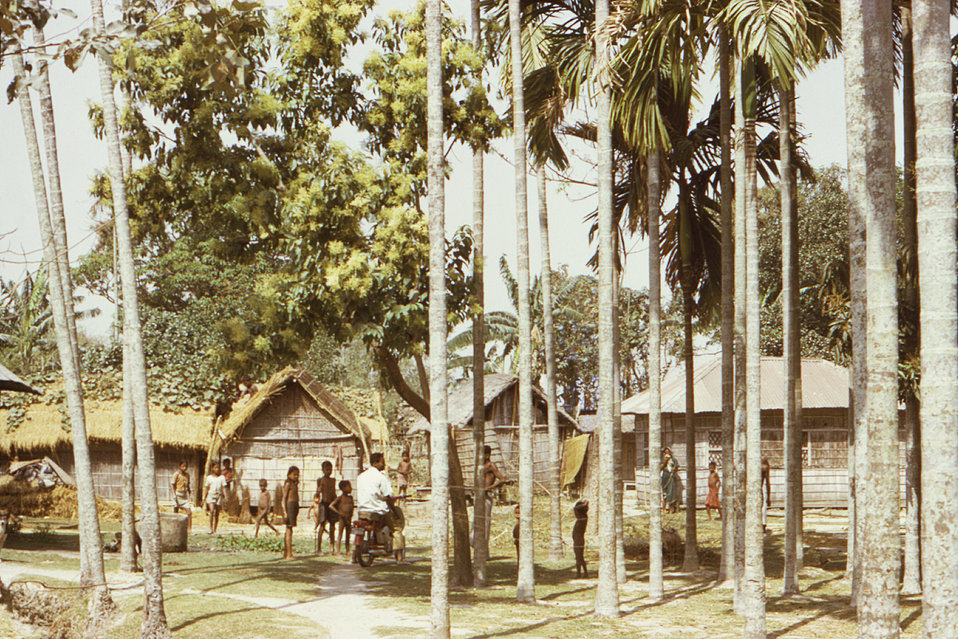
Photographed sometime in the early 1970s, during the worldwide smallpox eradication campaign, this image depicted a village scene in the streets in a small town in Bangladesh. This village happened to be infected with smallpox.The Disease